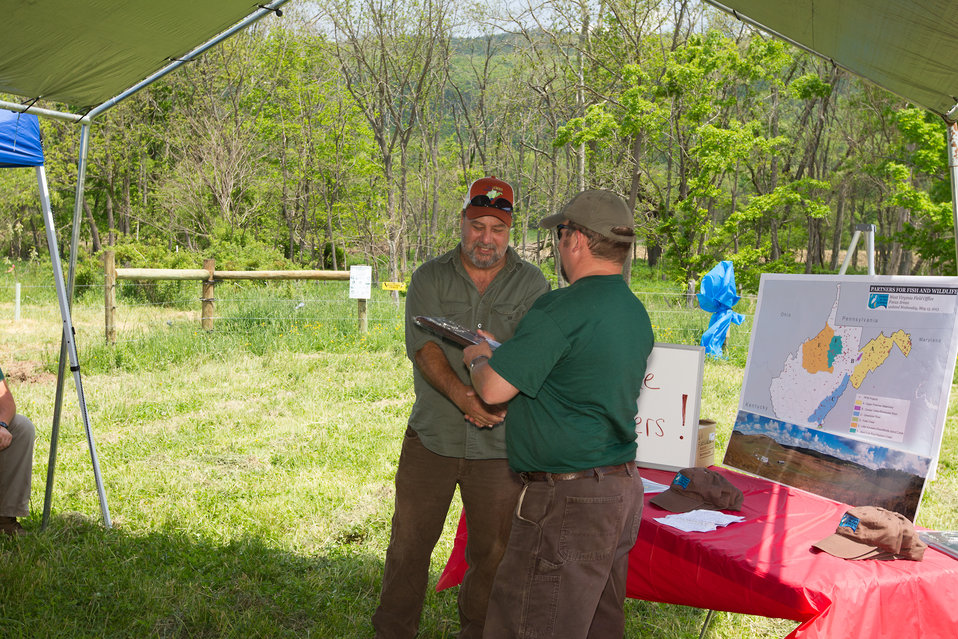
Celebrating 1 Million Feet of Conservation Fence in WV

Partners for Fish and Wildlife Program